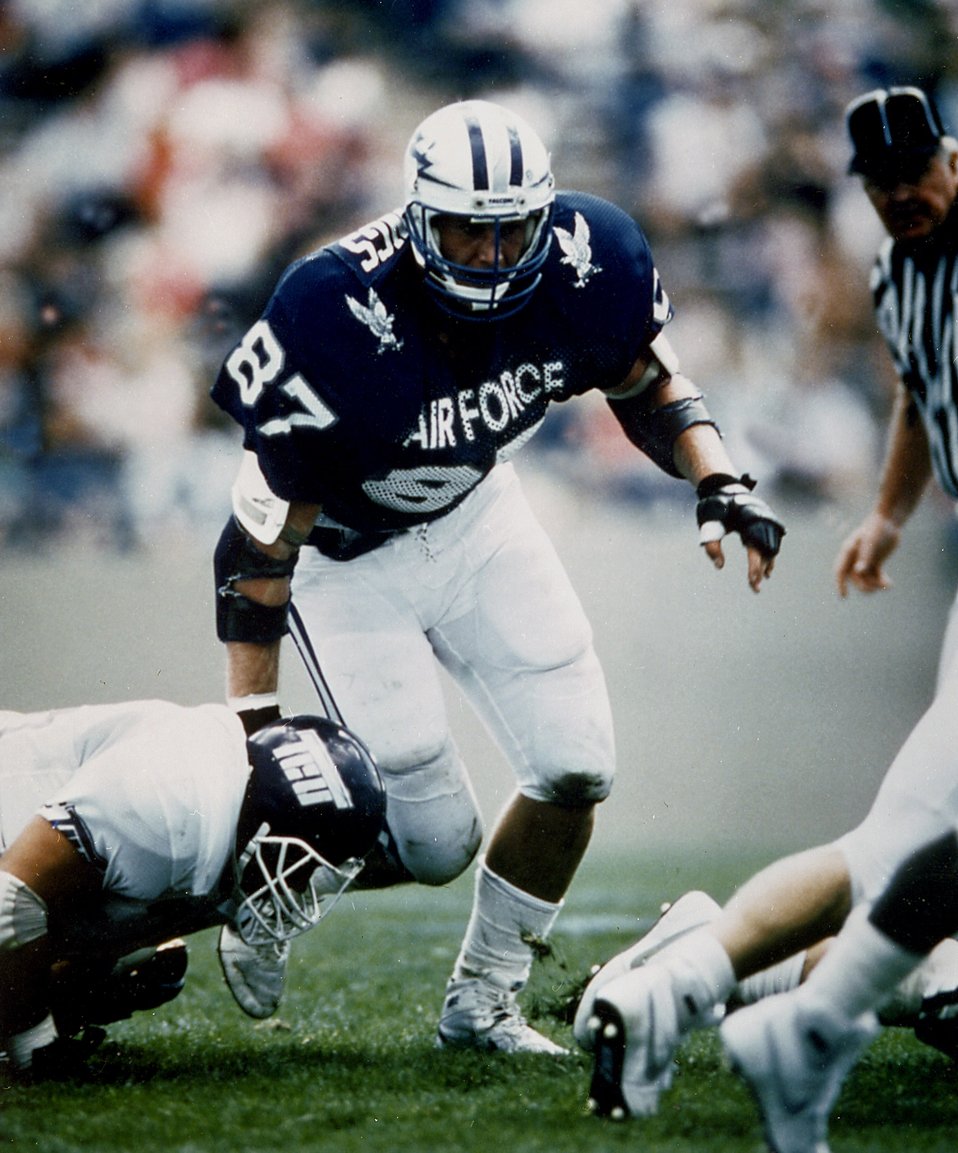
Academy announces inaugural class into athletic hall of fame

Chad Hennings, a 1988 U.S. Air Force Academy graduate, is in the inaugural class being inducted into the Air Force Academy Athletic Hall of Fame. Hennings is the most celebrated football player in academy history. After fulfilling his Air Force commitment, he signed with the Dallas Cowboys in 1992, playing nine seasons with the team and earning three Super Bowl rings.